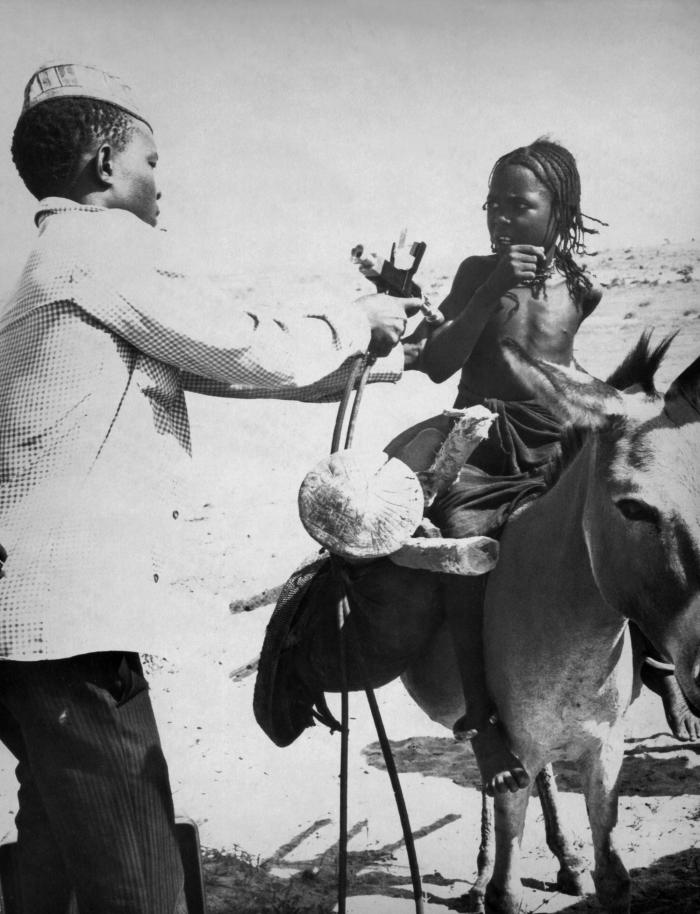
This image was acquired between 1967 and 1969 during Niger's Smallpox Eradication Program.